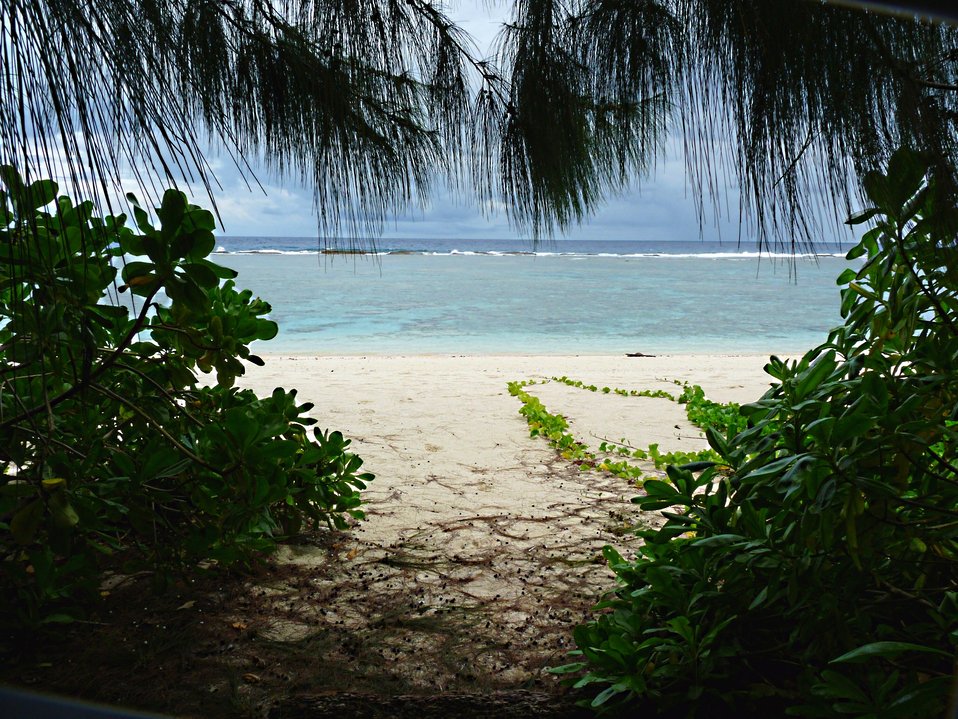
Ritidian Beach - Guam NWR